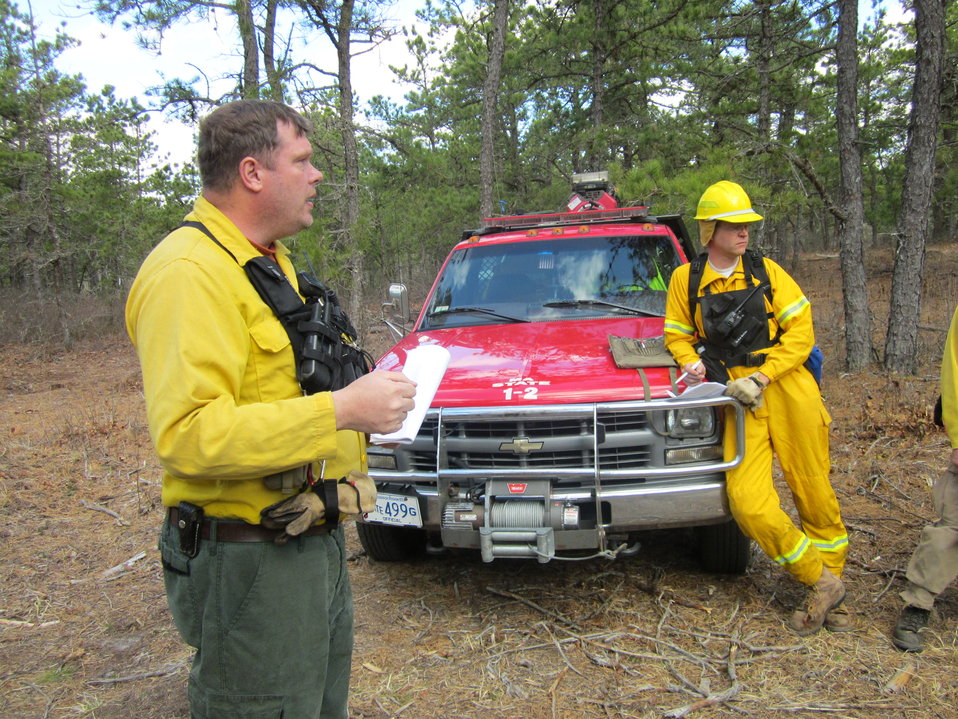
Burn Boss

Mashpee, Massachusetts, April 5, 2012. Burn boss Joel Carlson (left) of Northeast Forest and Fire Managment does a safety briefing for a controlled burn at the Town of Mashpee Holland Hill Barrens area of Mashpee National Wildlife Refuge. At right is Jim Rassman of the Massachusetts Department of Conservation and Recreation. The burn reduced fire risk to neighboring homes and improved habitat for the New England cottontail. It was conducted by the Town of Mashpee, U.S. Fish and Wildlife Service, State of Massachusetts Department of Conservation and Recreation, and Northeast Forest and Fire Management.